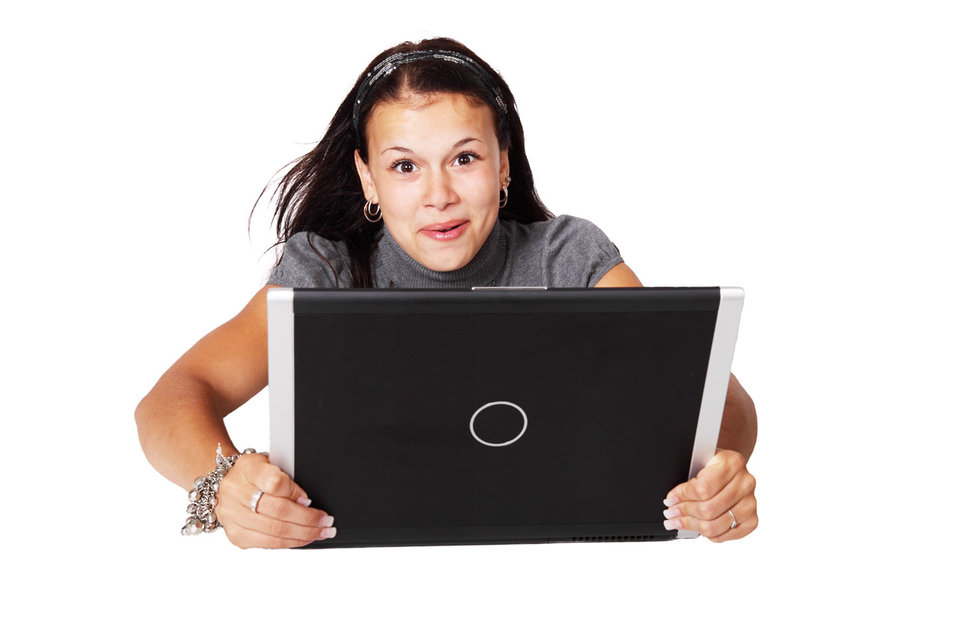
Fast internet

Young woman amazed with the speed of fast broadband internet.